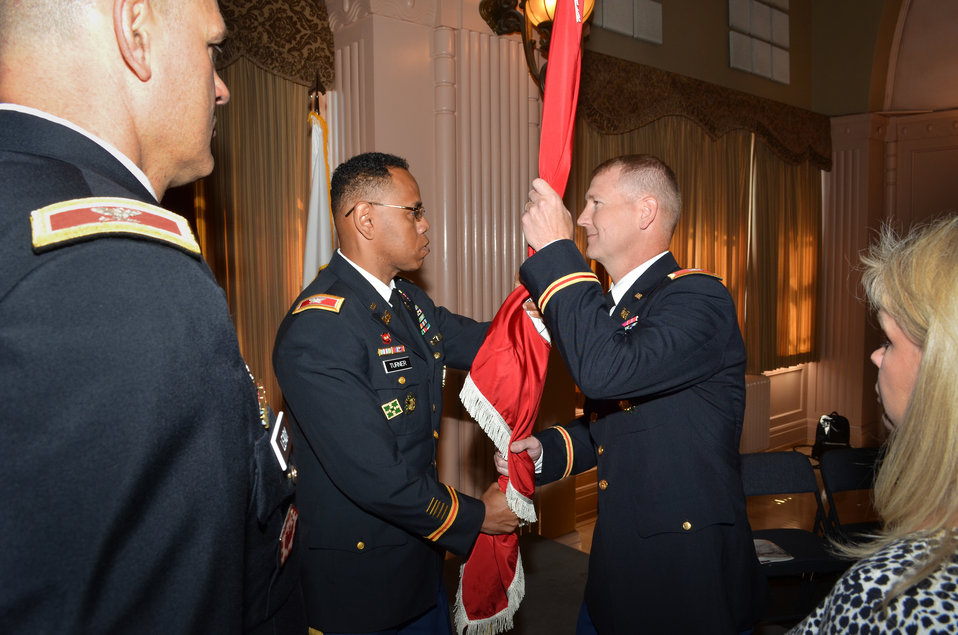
Colonel Turner passes the colors to Col. Farrell

Colonel David Turner (center) passes the Sacramento District’s colors to Col. Michael J. Farrell during a change of command ceremony for the U.S. Army Corps of Engineers Sacramento District at the Masonic Temple in Sacramento, Calif., July 10, 2013.